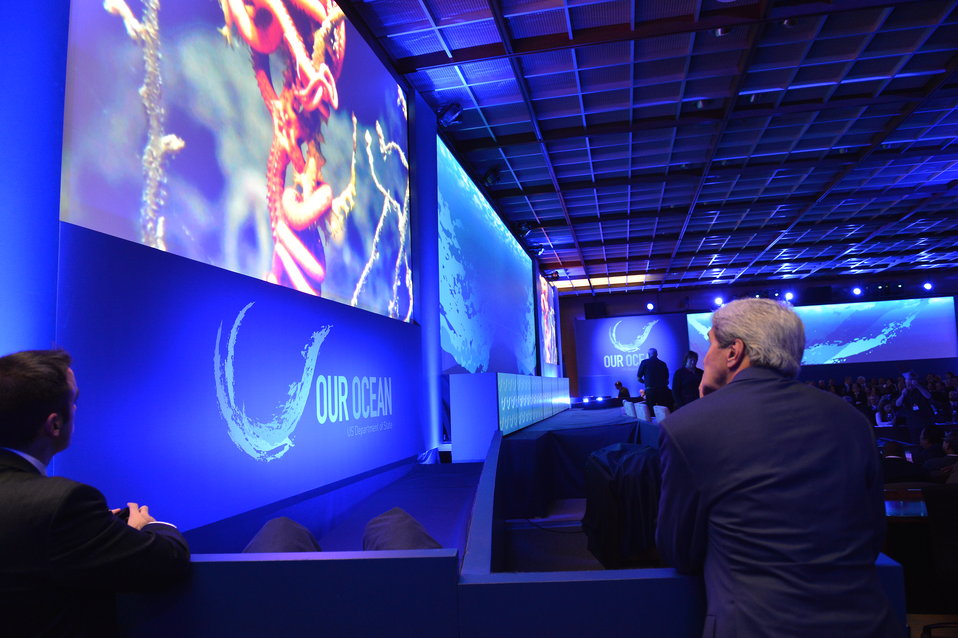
Secretary Kerry at the 'Our Ocean' Conference

U.S. Secretary of State John Kerry watches a video at the opening session of the 2014 'Our Ocean' conference at the U.S. Department of State in Washington, D.C. on June 16, 2014.